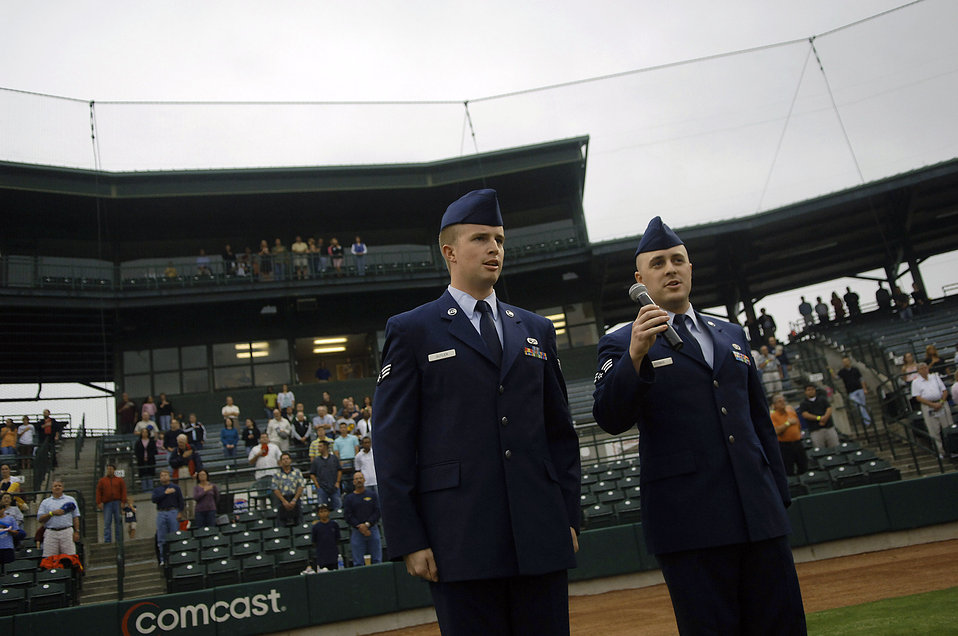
Airman inspires others, self by singing national anthem

Senior Airman Kris Butler and Staff Sgt. (then senior airman) Sam Hymas sing the national anthem to open the Charleston Riverdogs game May 29 at Joseph P. Riley Jr. Park in Charleston, S.C. Airman Butler is with the 437th Aircraft Maintenance Squadron and Airman Hymas is assigned to the 437th Airlift Wing.